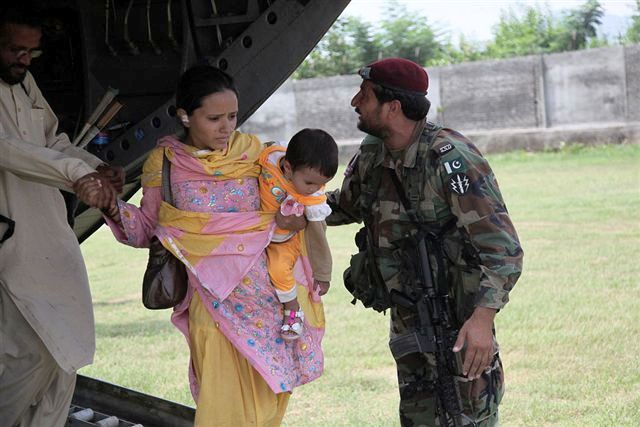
Members of the Pakistan Military Help Civilians Unload from a U.S. Army Helicopter

Members of the Pakistan military help civilians unload from the back of a U.S. Army (CH-47) helicopter in the town of Khwazahkela during the evacuation of civilians as part of the disaster relief effort to help flood victims from Khyber Pakhtunkhwa Province (formerly North West Frontier Province), Pakistan, on August 5, 2010.